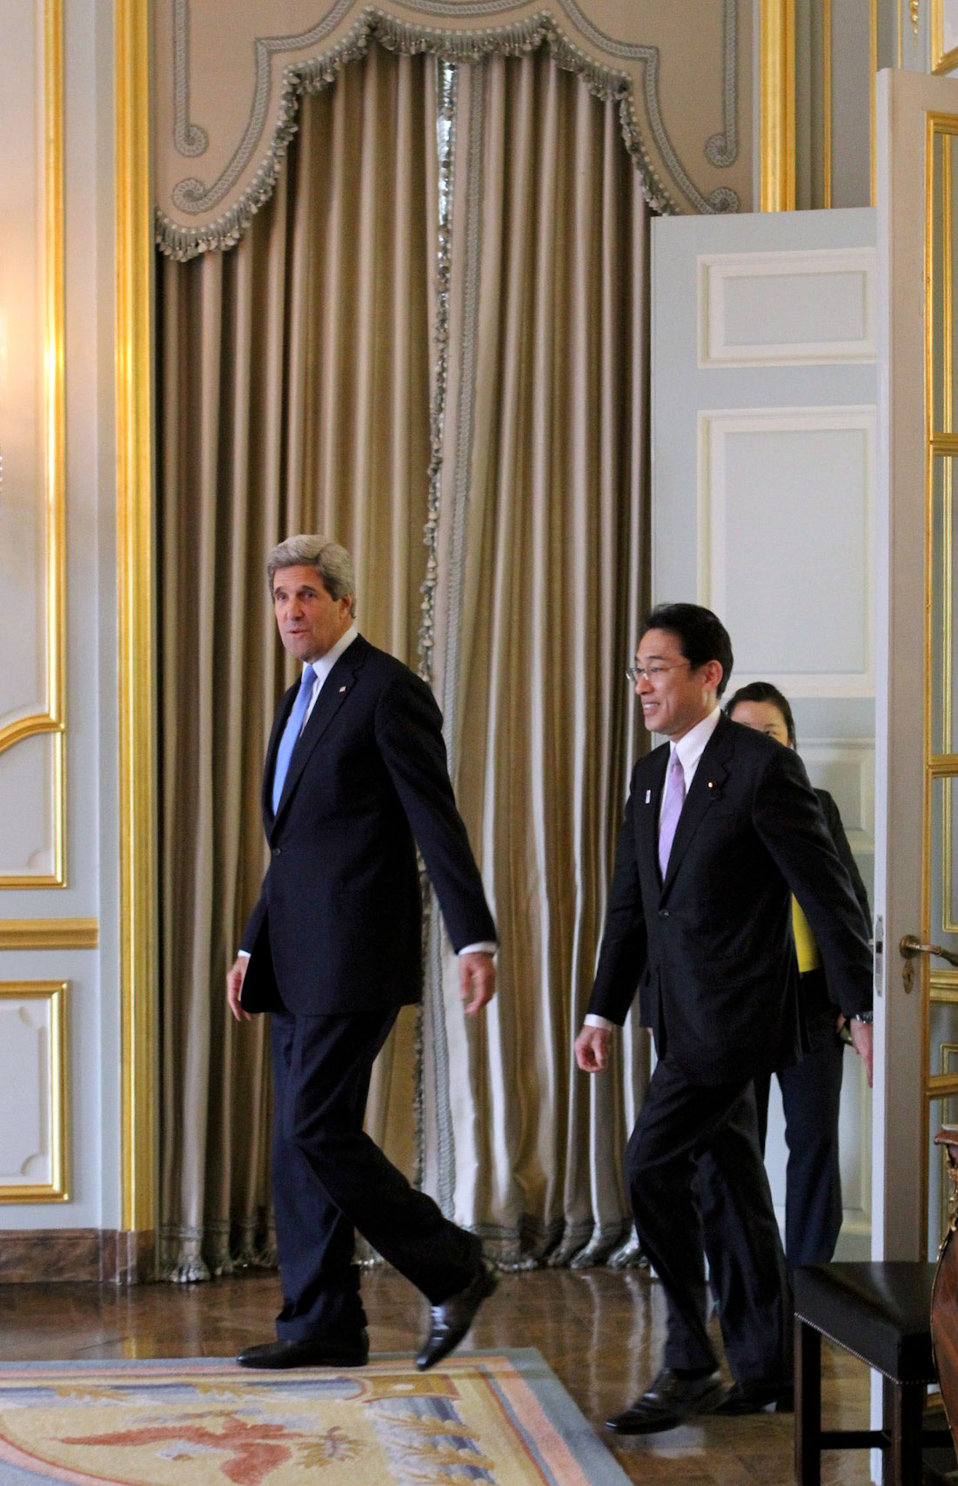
Secretary Kerry Meets With Japanese Foreign Minister Kishida

U.S. Secretary of State John Kerry meets with Japanese Foreign Minister Fumio Kishida at the Winfield House, the residence of the U.S. Ambassador, in London, United Kingdom, April 10, 2013.